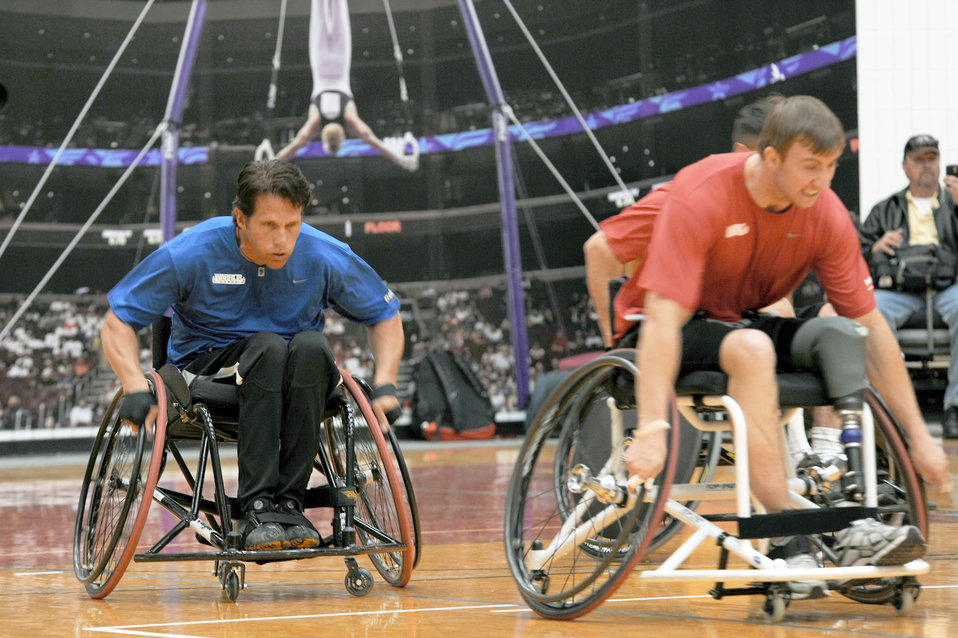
Warrior Games basketball competition

Jason Morgan races down the court during a wheelchair basketball game against the Marines May 11, 2010, at the Olympic Training Center in Colorado Springs, Colo. The Marines routed the Air Force team 68-13.